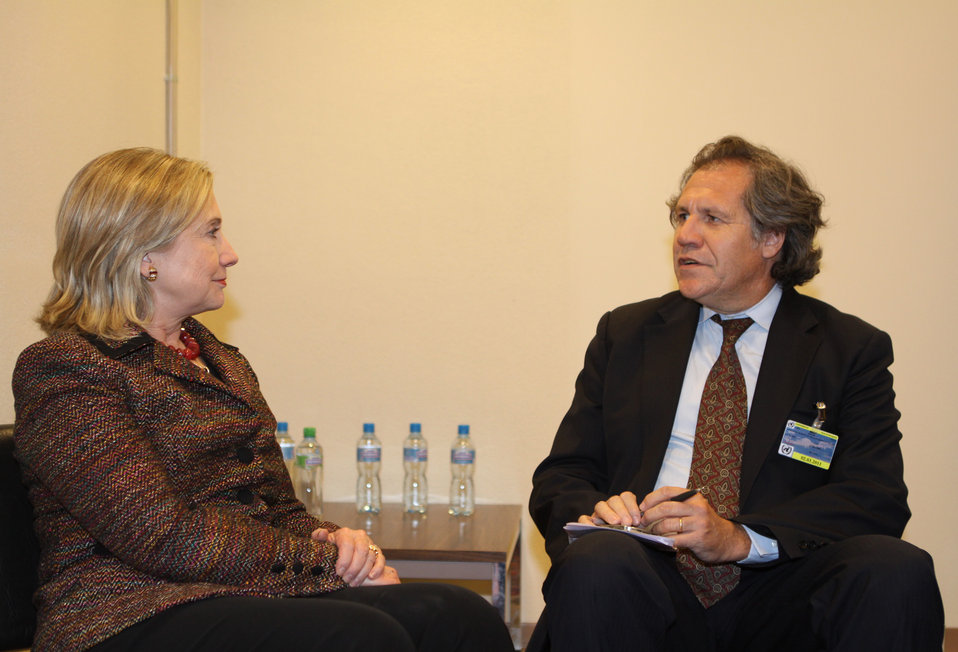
Secretary Clinton Meets With Uruguayan Foreign Minister Almagro

U.S. Secretary of State Hillary Rodham Clinton meets with Uruguayan Foreign Minister Luis Almagro at United Nations Office at Geneva, Switzerland, on February 28, 2011. The meeting took place on the sidelines of the High Level Segment of the Human Rights Council which brought together many foreign ministers in Geneva.